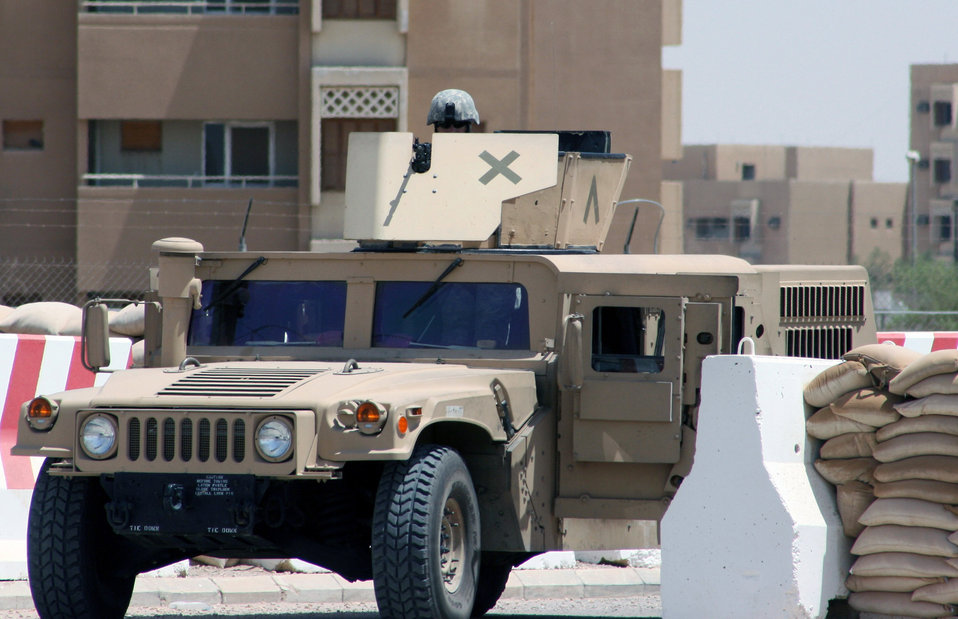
Reserve liaison office answers for AOR

Staff Sgt. Josef Mabie mans the turret for a quick reaction force at a Southwest Asia base Oct. 1. The 64th Air Expeditionary Group there provides force protection and base support to enable U.S. security assistance operations and enhance strategic partnerships. The group is 72 percent Guard, 25 percent active duty, and 3 percent Air Force Reserve, exemplifying total force and joint concepts. Sergeant Mabie is Air National Guard member with the 64th Expeditionary Security Forces Squadron.